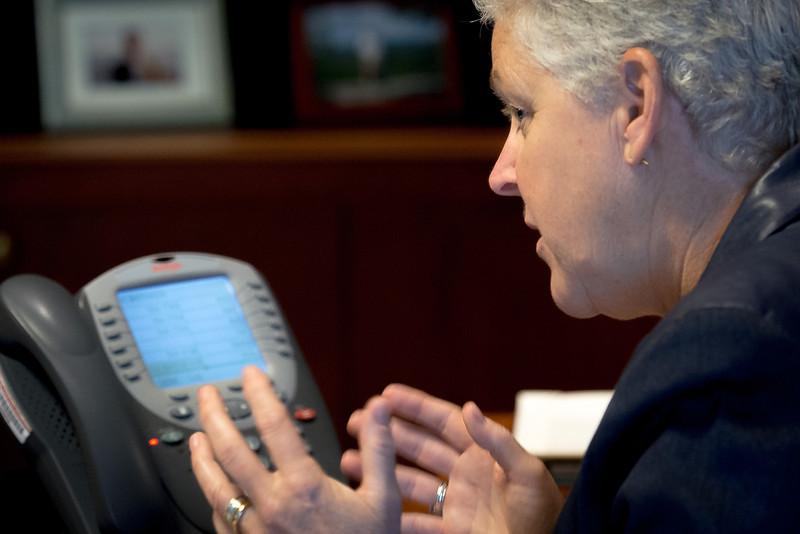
Day in the Life - June 2, 2014

1:06 pm - Following her speech McCarthy continued the agency’s robust outreach in explaining the new proposal to reduce carbon pollution. (12/15)